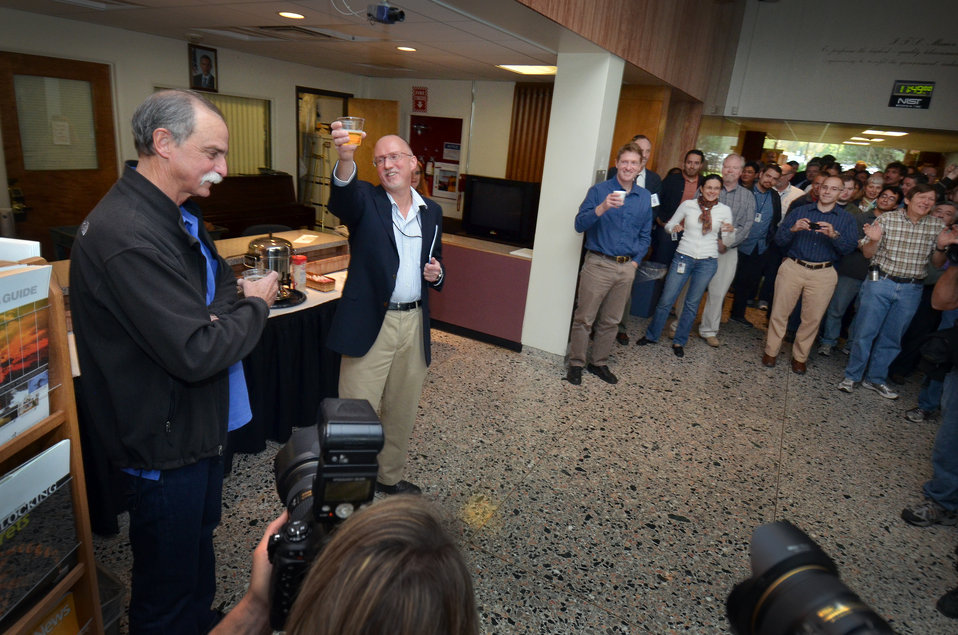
NIST Nobel Laureate David Wineland

NIST Time & Frequency Division Chief Tom O’Brian raises a glass of non-alcoholic sparkling cider to toast NIST Nobel Laureate David Wineland (left) at an Oct. 9 reception. NIST Boulder staff celebrated the Nobel prize announcement following a news briefing for local media.